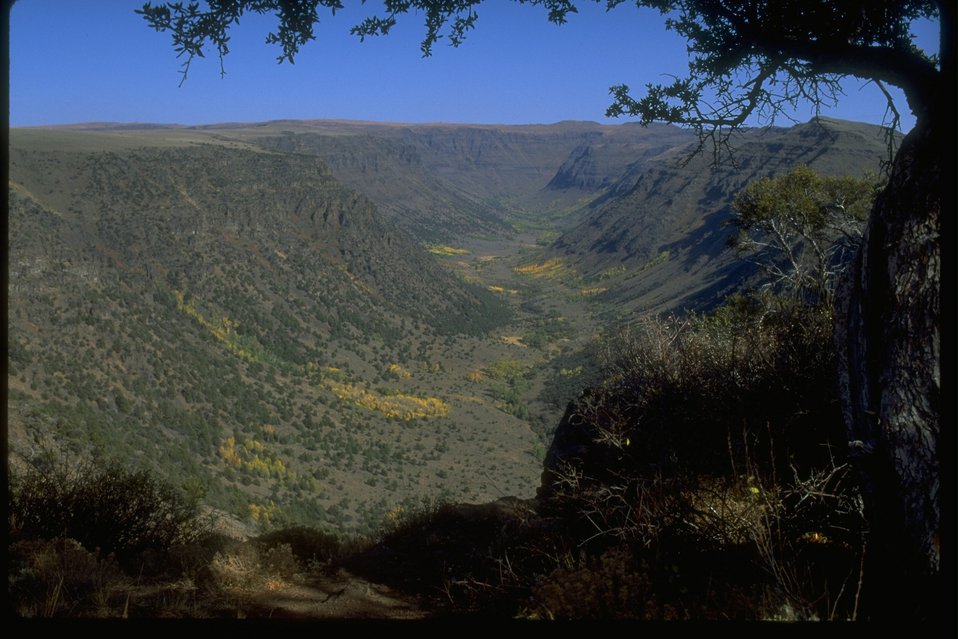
Steens Mountain series.